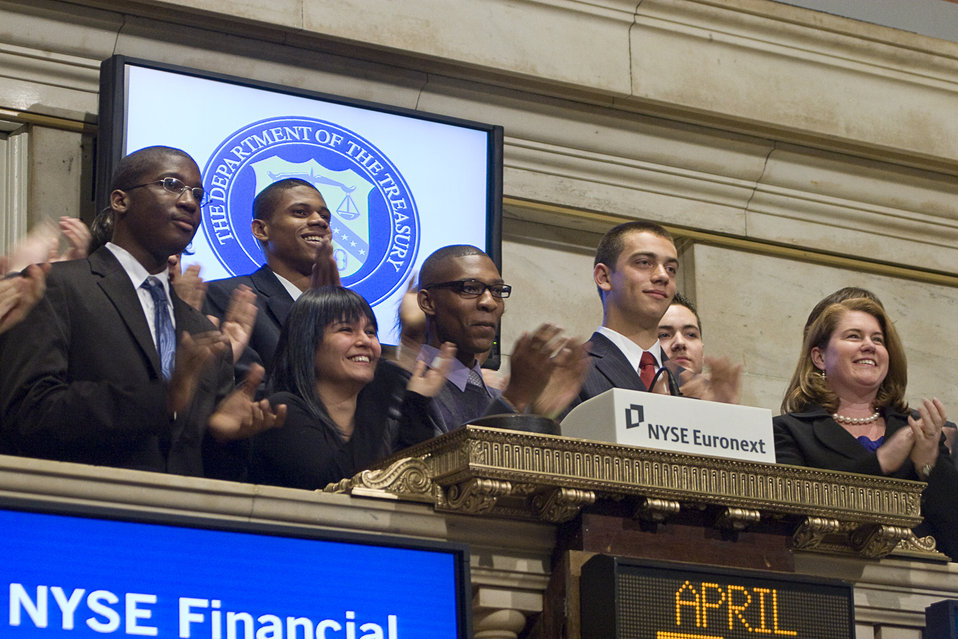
New York Stock Exchange, 4/30/2010

On April 30, 2010, students and educators who participated in the Obama Administration’s National Financial Capability Challenge visited the New York Stock Exchange (NYSE) to tour the facility and ring The Closing Bell.